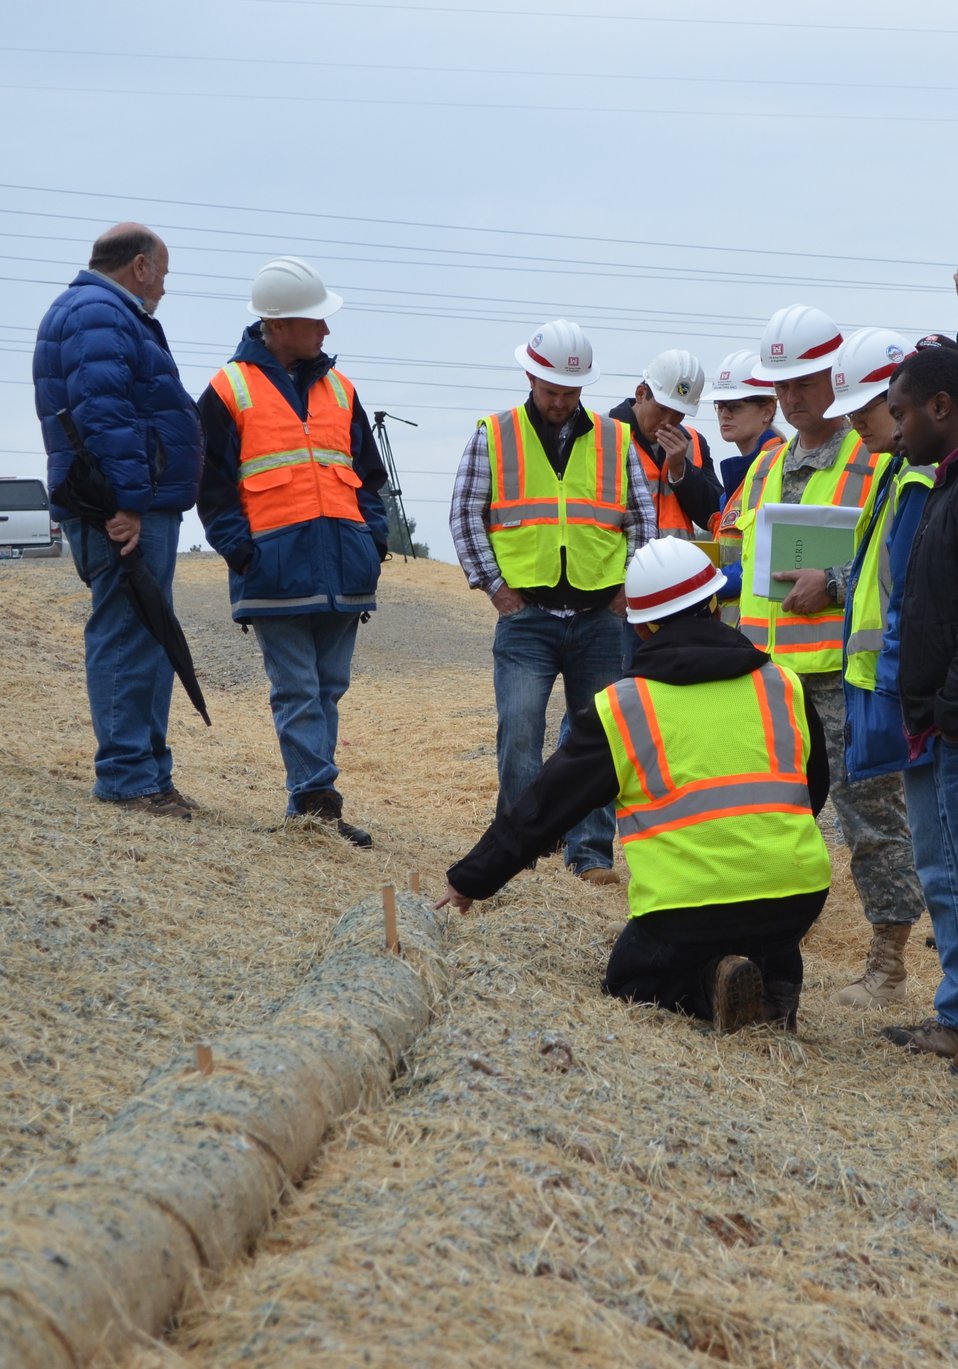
Howe Avenue levee raise inspection

Alex Kan (kneeling), environmental engineer for the U.S. Army Corps of Engineers Sacramento District, inspects a fiber roll designed to control sediment and storm water runoff during an inspection at the Corps’ Howe Avenue levee raise project in Sacramento, Calif., Nov. 16, 2012. Corps construction representatives inspected completed work on the project to raise and reinforce more than 4,000 feet of levee along the American River as part of wrapping up construction.